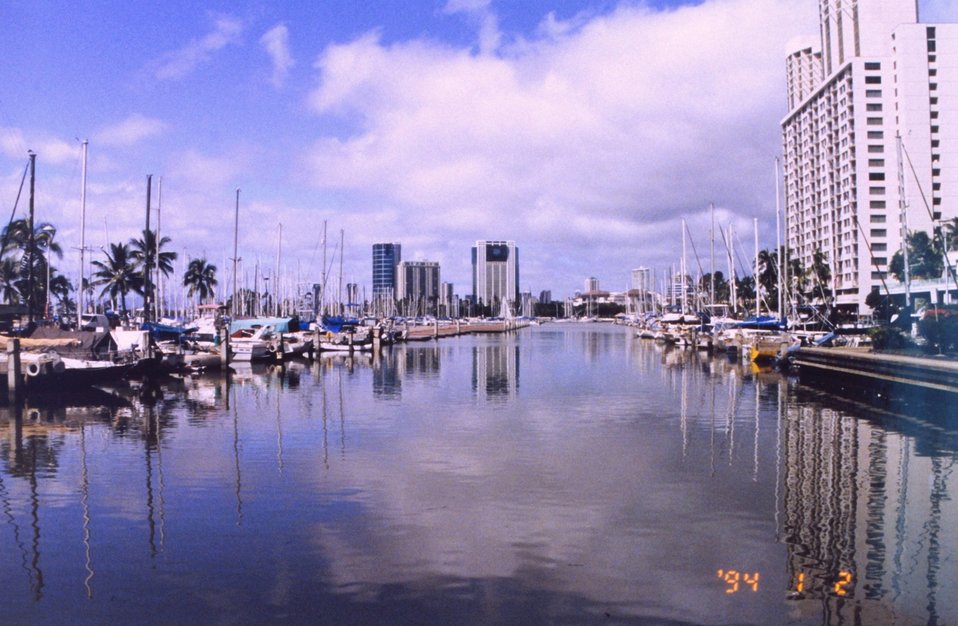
A view at the Ali Wai Yacht Harbor near Waikiki Beach.